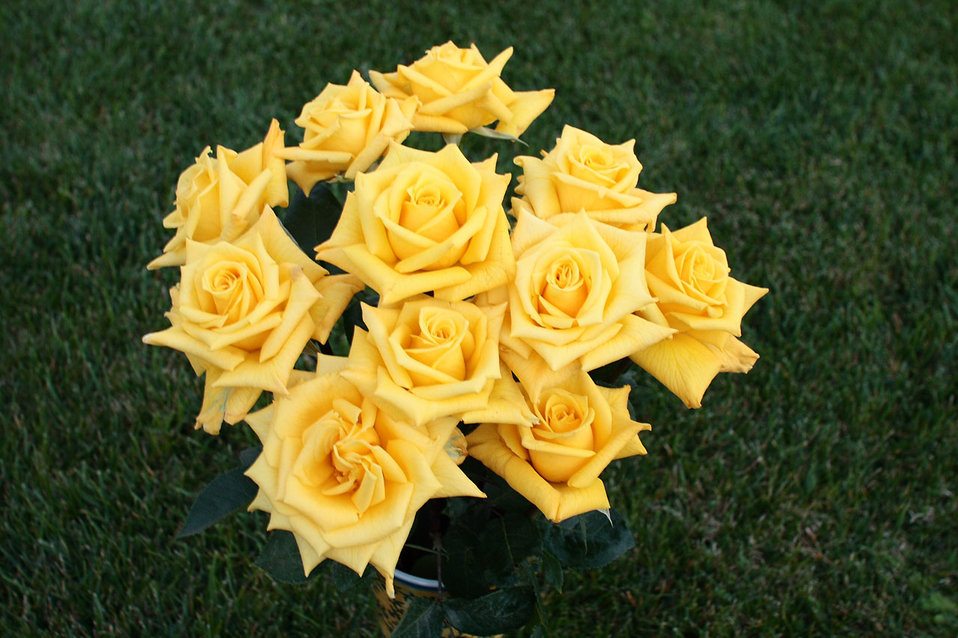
Bouquet of yellow roses

Bouquet of large, long-stem, yellow roses in full bloom.